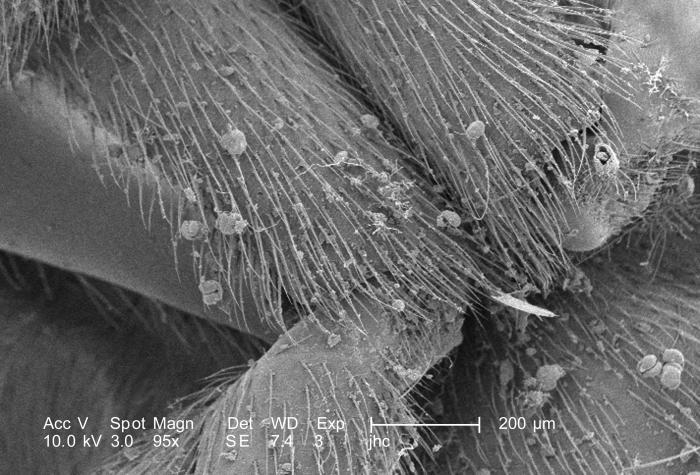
Revealed using a scanning electron microscope (SEM), and at a low magnification of 95X, was some of the exoskeletal ultrastructural morphology of an unidentified debris-laden insect, which had been discovered deceased in the suburbs of Decatur, Georgia. Depicted in this particular image was a section of the insect's thoracic region, located between its head, and the abdominal regions. The scattered particulate matter adorning the insect's exoskeletal surface was merely environmental debris common to its habitat. Note the two exoskeletal leg joints, which is actually the characteristic responsible for its placement into the Phylum Arthropoda, i.e., Arthro